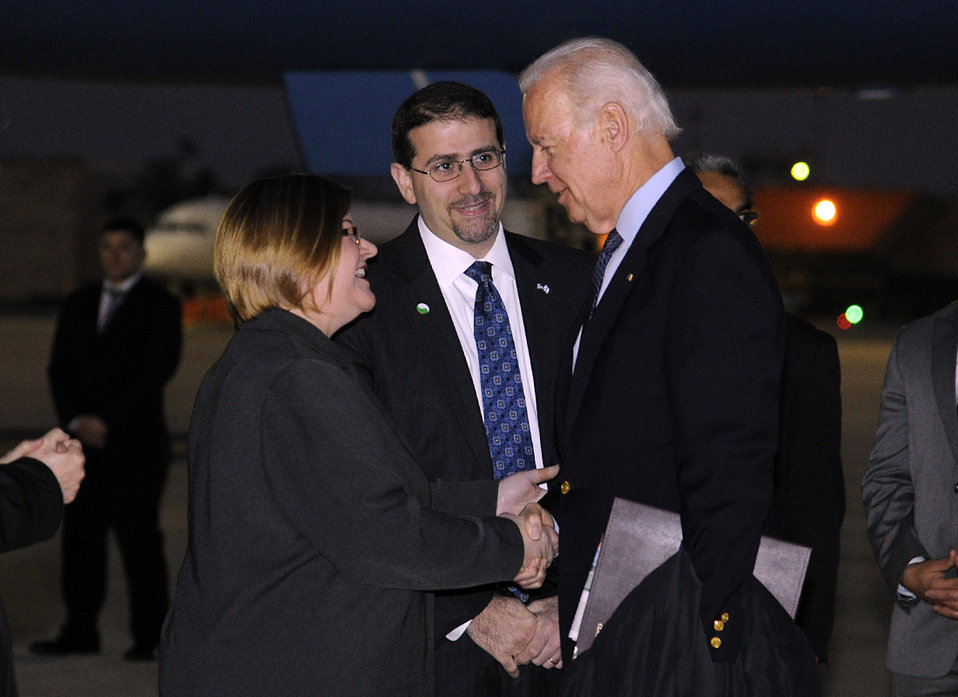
Secretary Kerry is Greeted by Mrs. Fisher Upon Arrival to Israel

Vice President Joe Biden is greeted by U.S. Ambassador to Israel Daniel Shapiro and his wife, Julie Fisher, upon arrival to Israel on January 13, 2013.